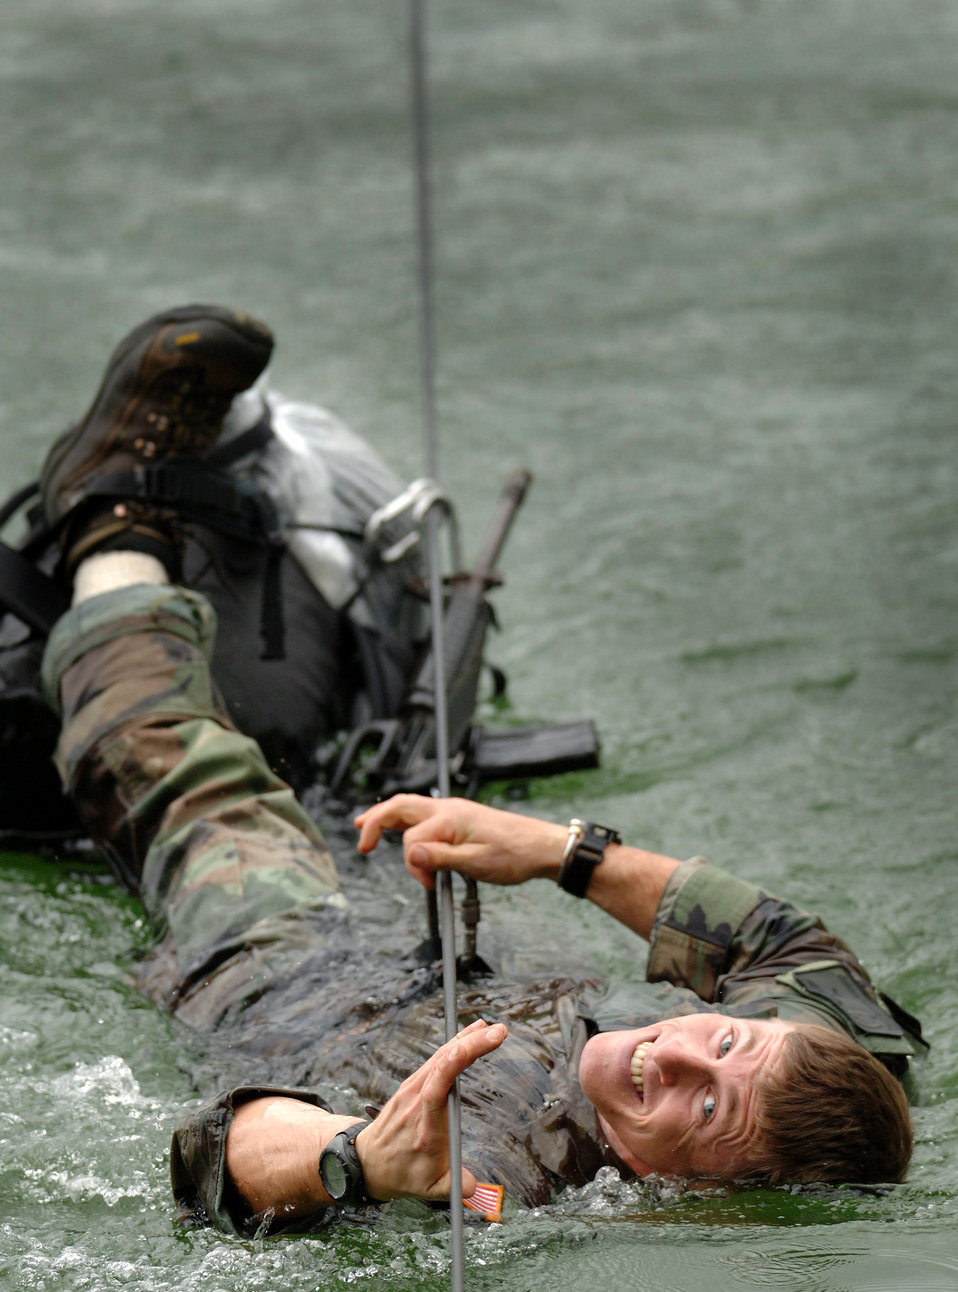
Joint training in Vermont mountains

Tech. Sgt. Dana Vaughan pulls himself across a cold Vermont pond on Thursday, June 8, 2006. Sergeant Vaughan, a pararescueman from Nellis Air Force Base, Nev., is attending a two-week summer mountaineer training course at the Vermont National Guard's Army Mountain Warfare School in Jericho, Vt.